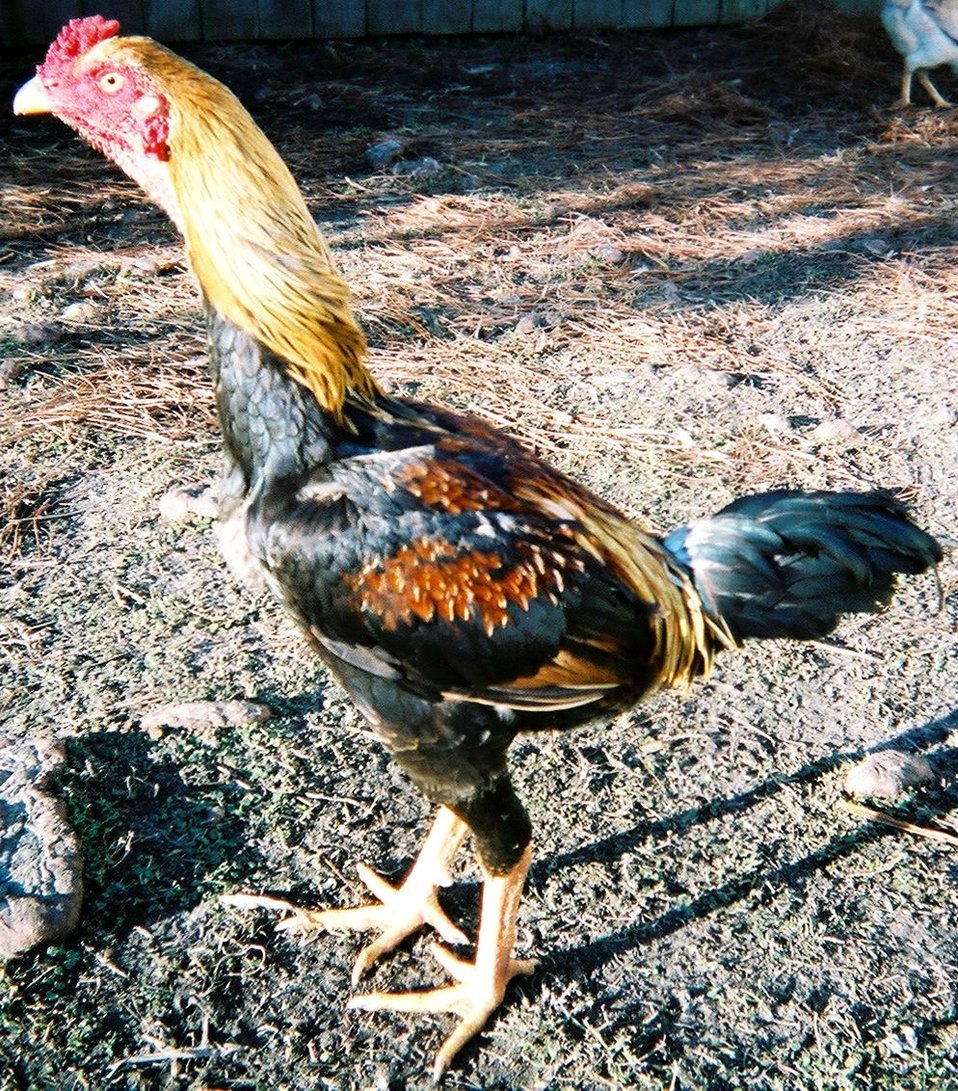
Saipan Jungle Fowl Male Black Breasted Red Cock, Picture taken by Robert Buhat.